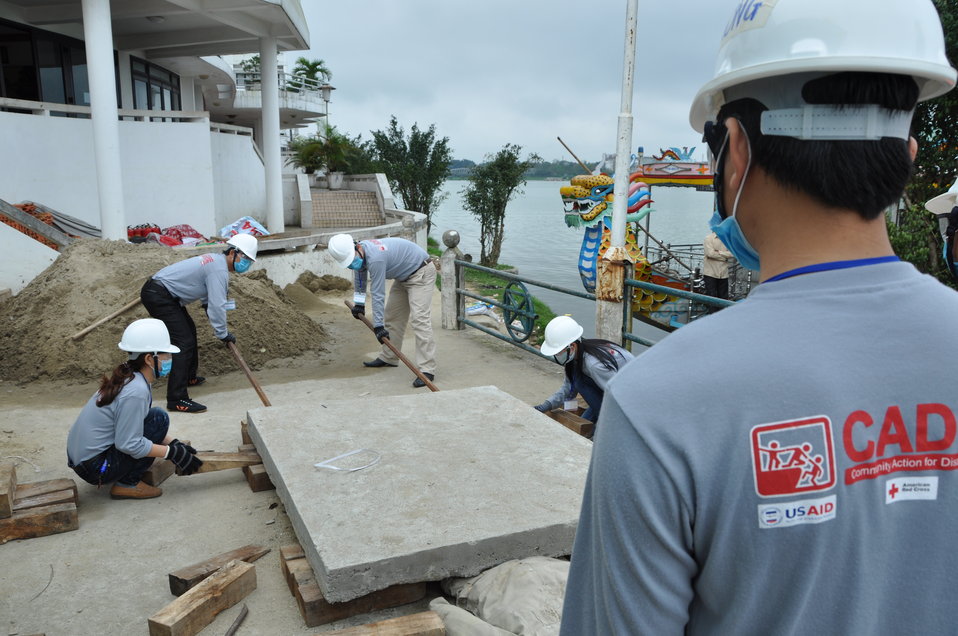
Disaster and Emergency Training Funded by USAID in Hue, Vietnam